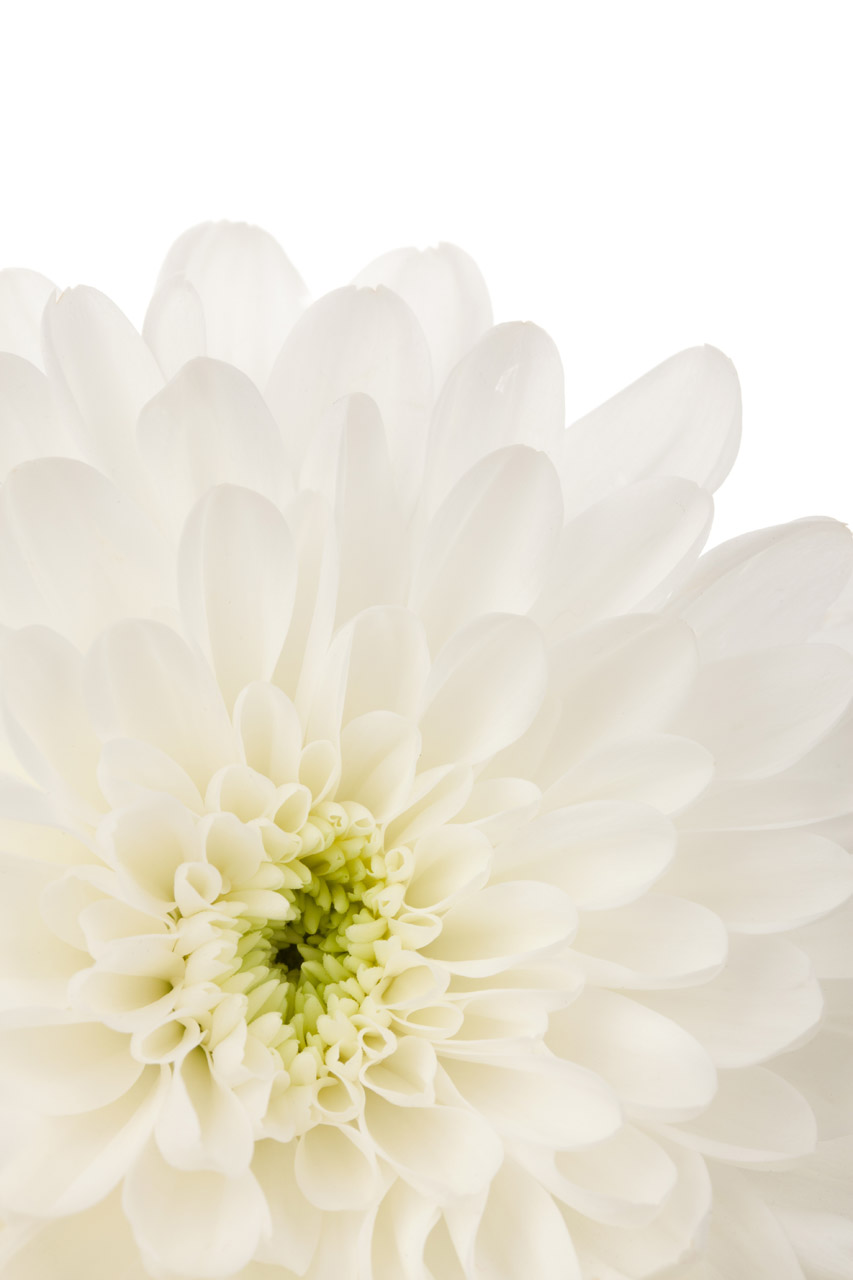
White dahlia

Detailed photo of a white dahlia flower isolated on white background.